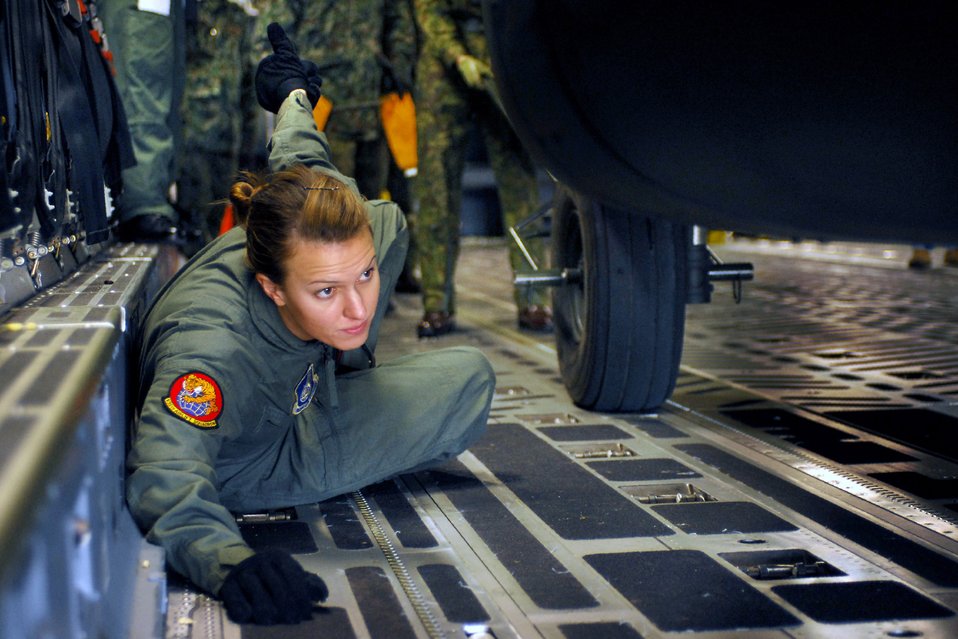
Go that way!

Senior Airman Lisa Long directs the loading of a Japan Ground Self Defense Force CH-47J Chinook helicopter onto a C-17 Globemaster III cargo plane Feb. 23 at Yokota Air Base, Japan.